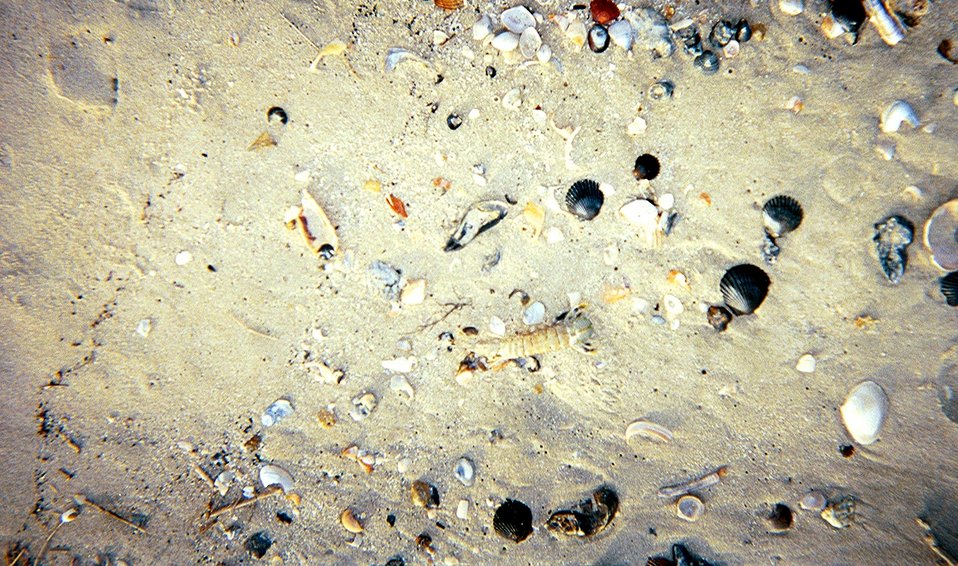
Scallops and mussel shells surround a portion of a lobster carapace.